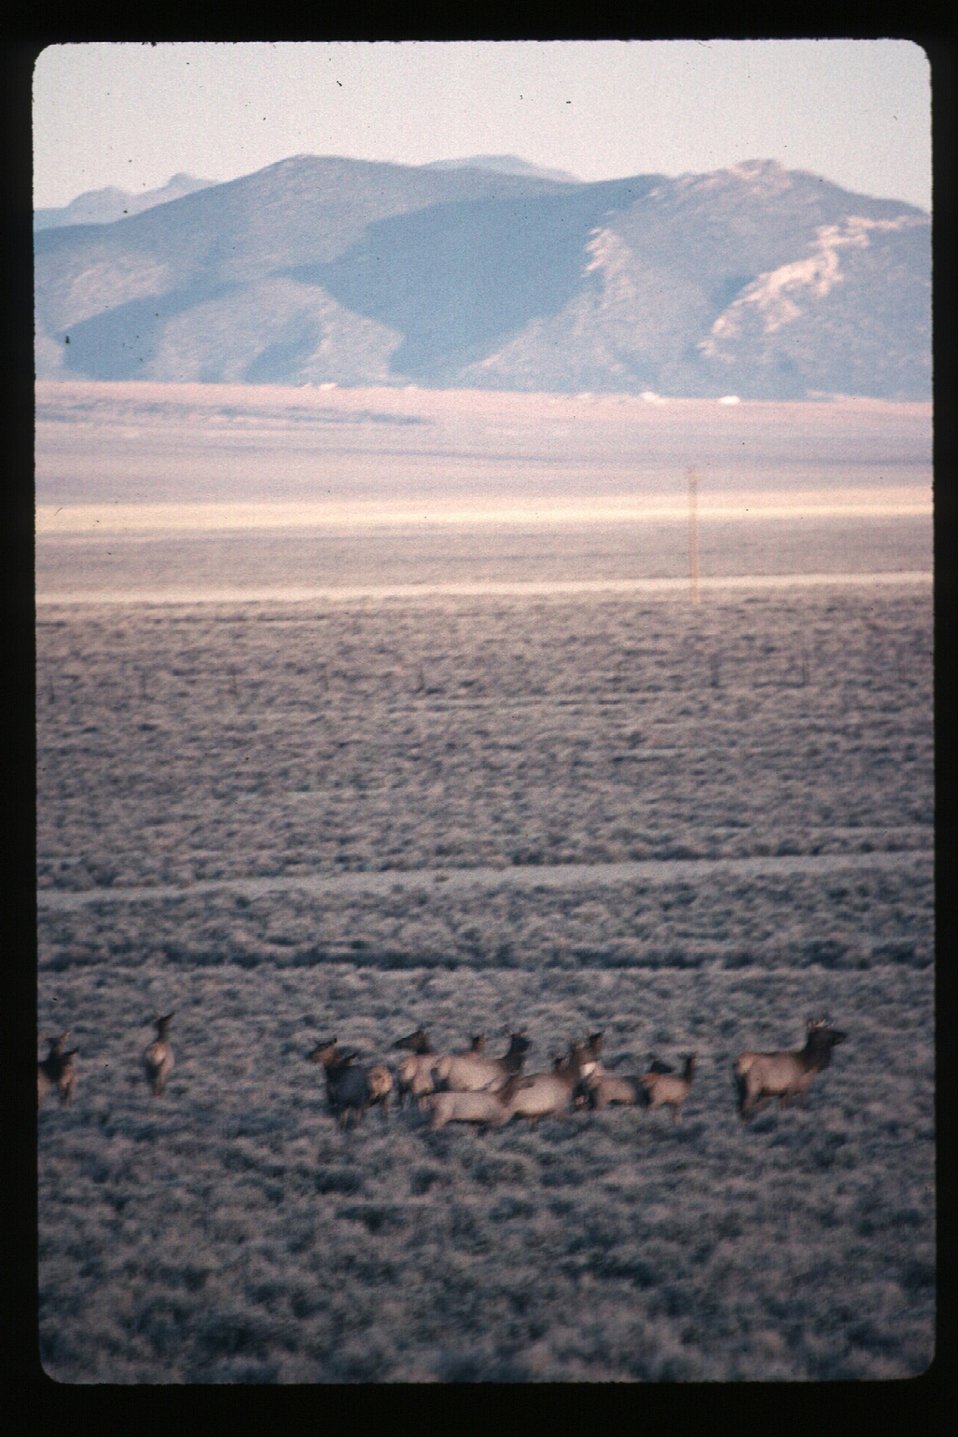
Elk Wildlife LSRD Lower Snake River District